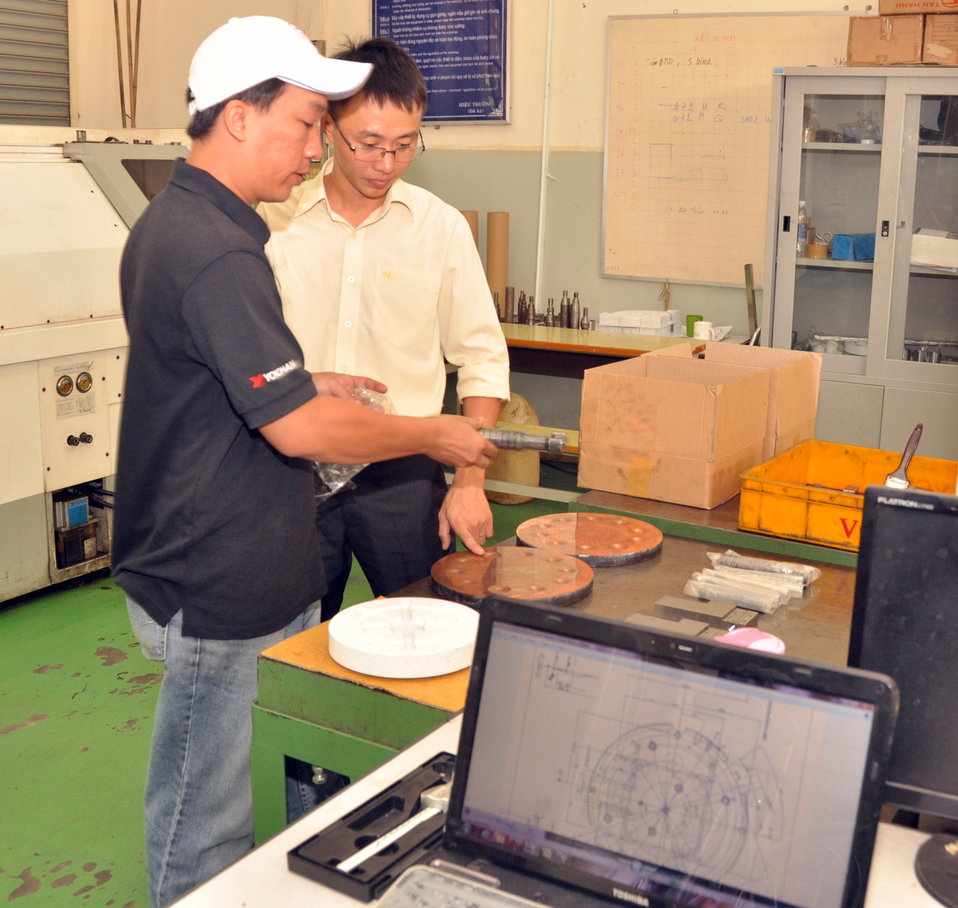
Ho Chi Minh Vocational College of Technology

Vu The Manh, lecturer of Mechanical Engineering Faculty at the Ho Chi Minh Vocational College of Technology

Photo: January 11, 2013, Richard Nyberg @USAIDVietnam